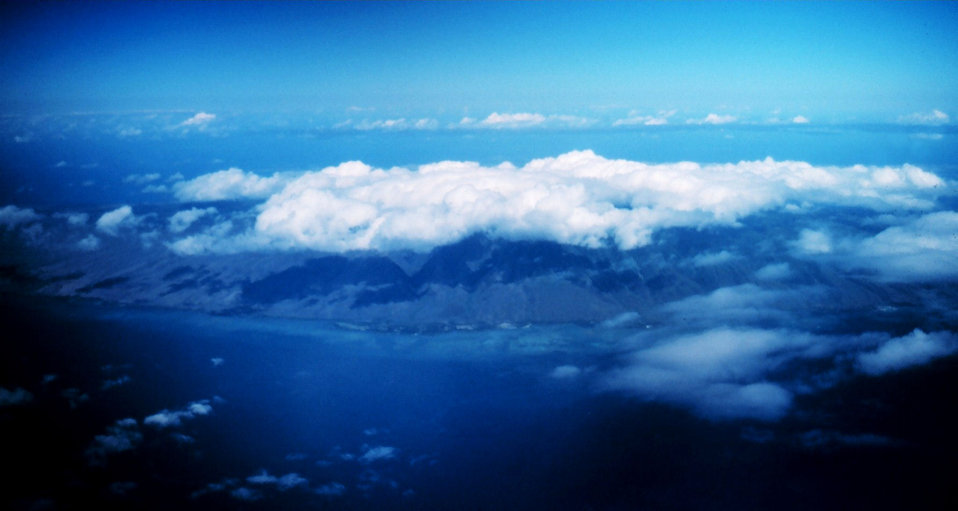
Oahu from the air